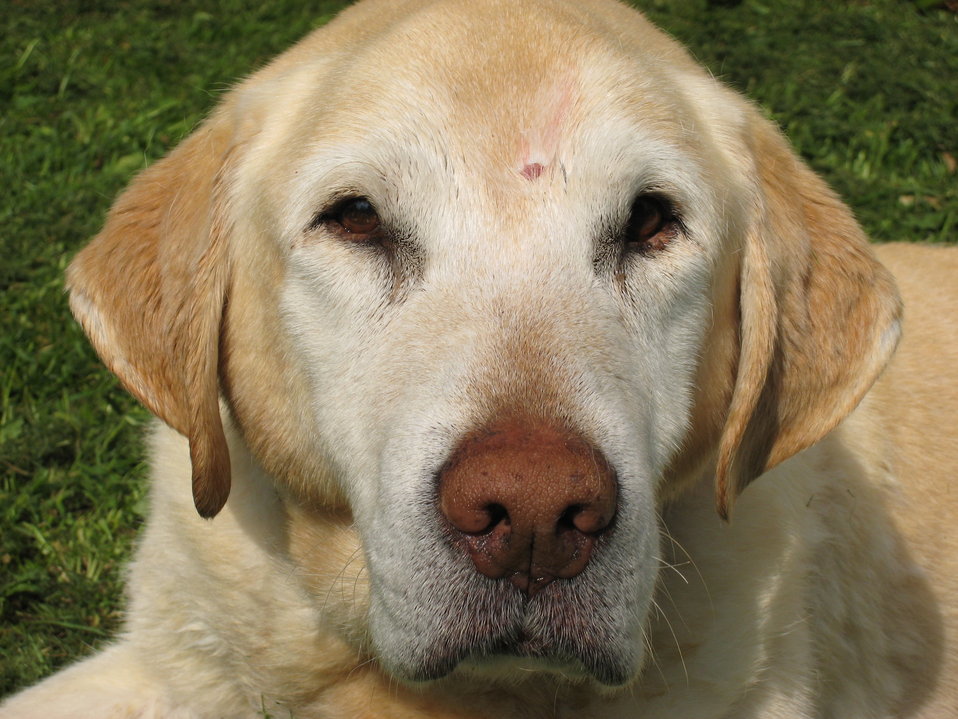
Yellow dog in grass